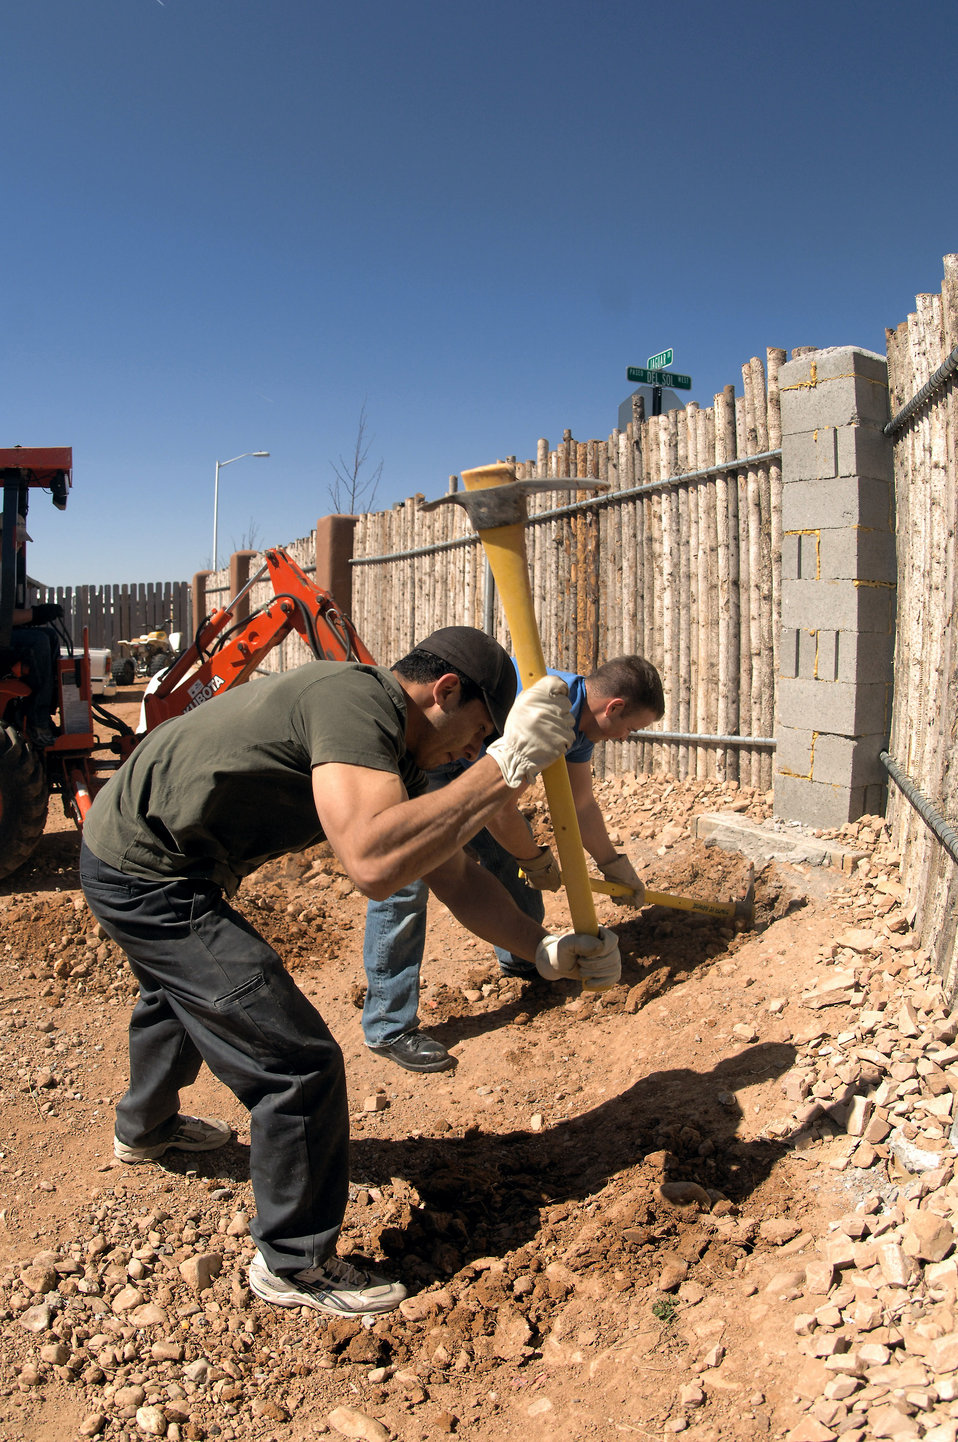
Cadets give up spring break to build homes

Cadet 2nd Class Francisco De La Torre, front, and Cadet 2nd Class Grant Smith use pick-axes to start leveling the landscape of the yard at a completed Habitat for Humanity home. Cadets De La Torre and Smith are two of 65 Air Force Academy cadets giving up their spring break this week, to build homes for the needy in Santa Fe, N.M.; Cody, Wyoming; El Paso, Texas; and Beaumont, Texas.